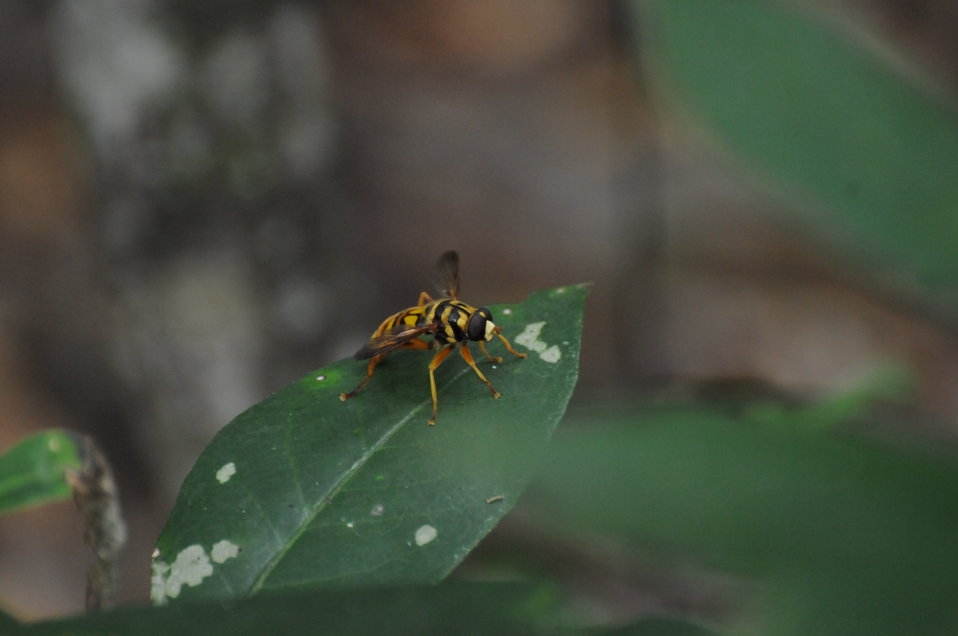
American hover fly sitting on a leaf

American hover fly